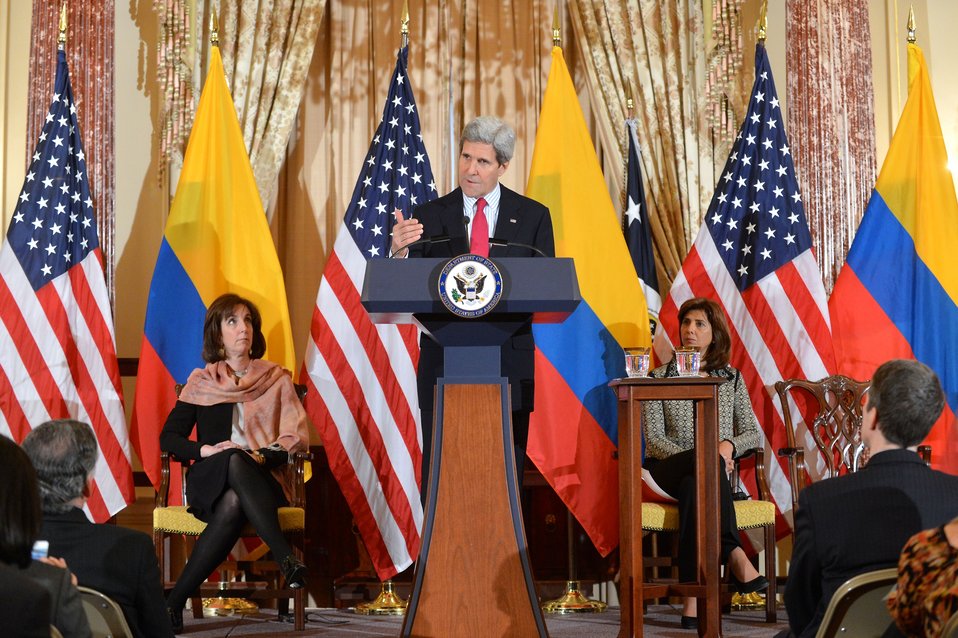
Secretary Kerry Delivers Remarks at the U.S.-Colombia High-Level Partnership Dialogue

With Assistant Secretary of State for Western Hemisphere Affairs Roberta Jacobson and Colombian Foreign Minister Maria Holguin looking on, U.S. Secretary of State John Kerry deliver remarks at the Fourth Annual U.S.-Colombia High-Level Partnership Dialogue the U.S. Department of State in Washington, D.C., on February 28, 2014.